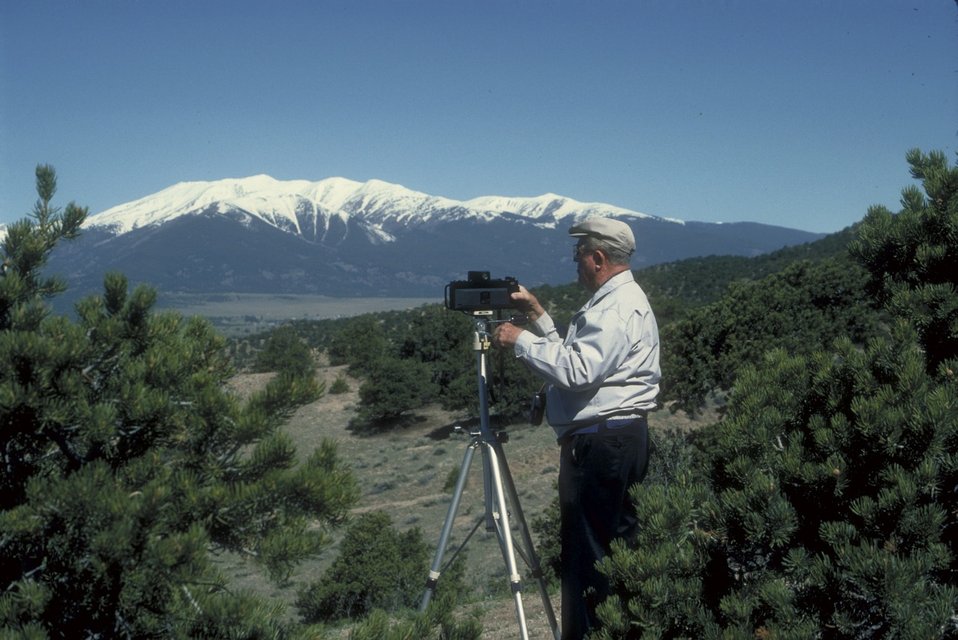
Photographing near the Arkansas River.